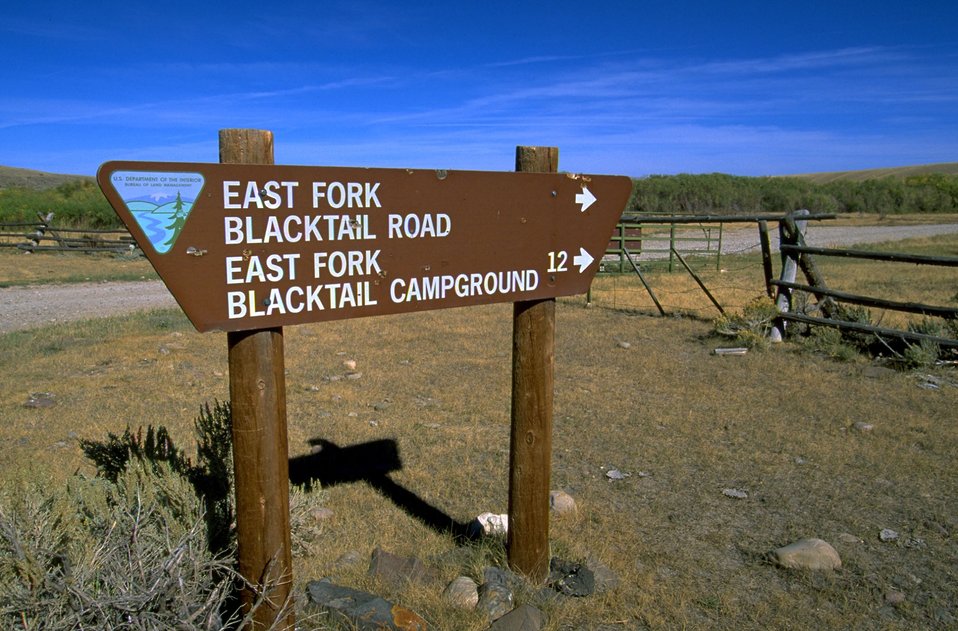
Road sign for East Fork Blacktail creek road